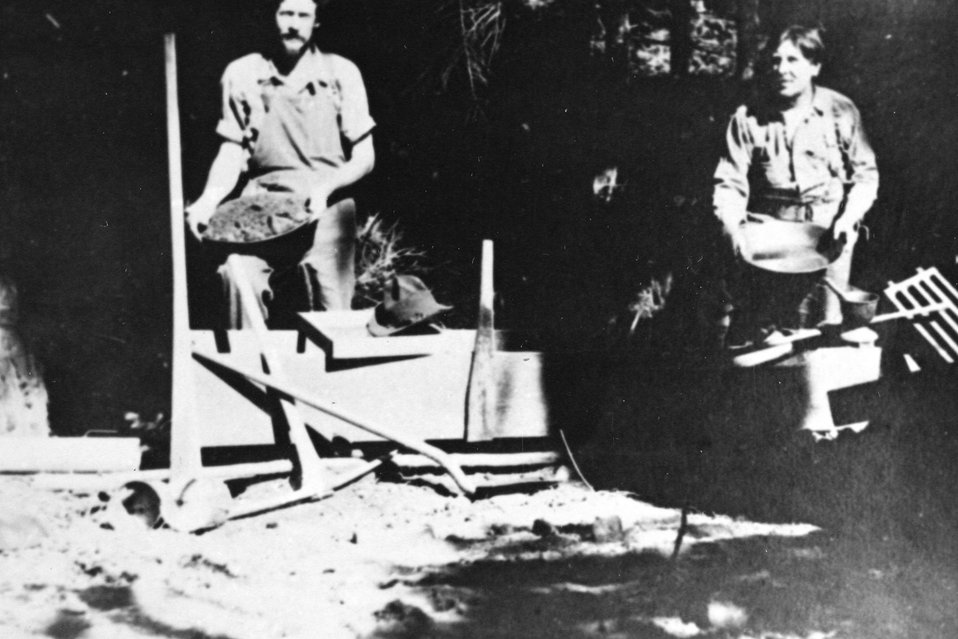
Gold panners not in the Rogue River Area